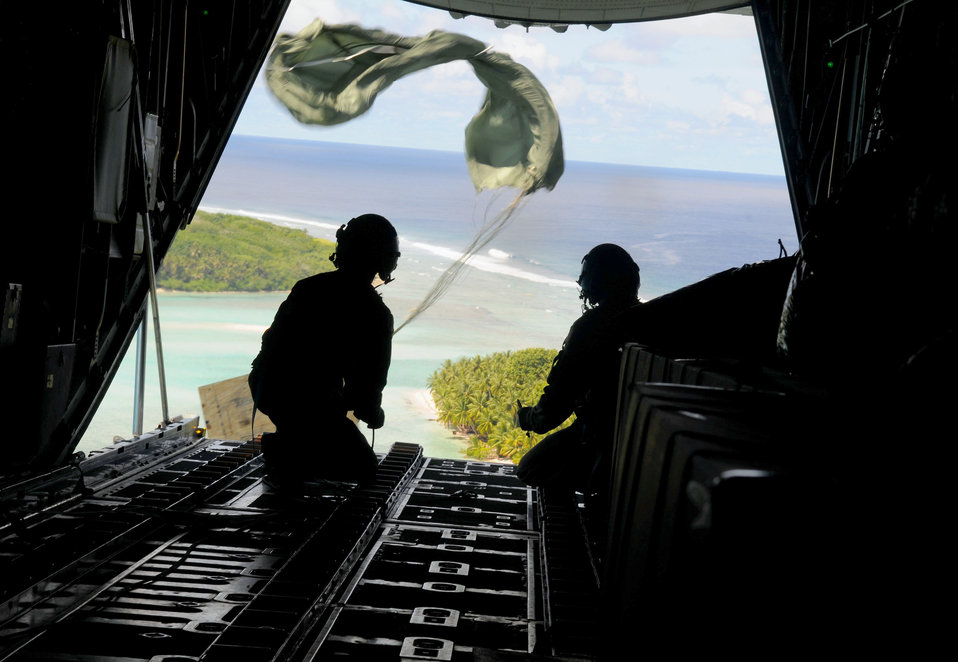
Operation Christmas Drop a team effort

Airmen from the 36th Airlift Squadron, Yokota Air Base, Japan, watch as the parachute deploys and a box of humanitarian goods travels to the Yap Islands below during Operation Christmas Drop, Dec. 14, 2010. Operation Christmas Drop is the Air Force's longest-running humanitarian which began in 1952. What started as a WB-50 aircrew returning to Guam on its final flight before Christmas has turned into the longest running humanitarian campaign in the history of the U.S. Air Force and the entire world.